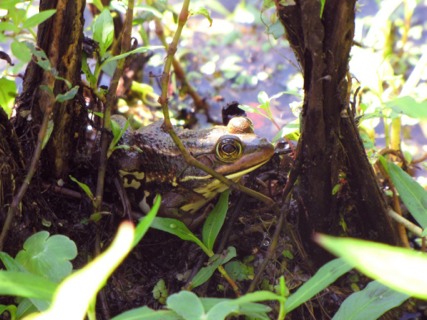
Mattaponi Wildlife Management Area, Virginia

Survey (June 27 - 28, 2012)

Carpenter frog (Lithobates virgatipes) a Virginia State species of concern.